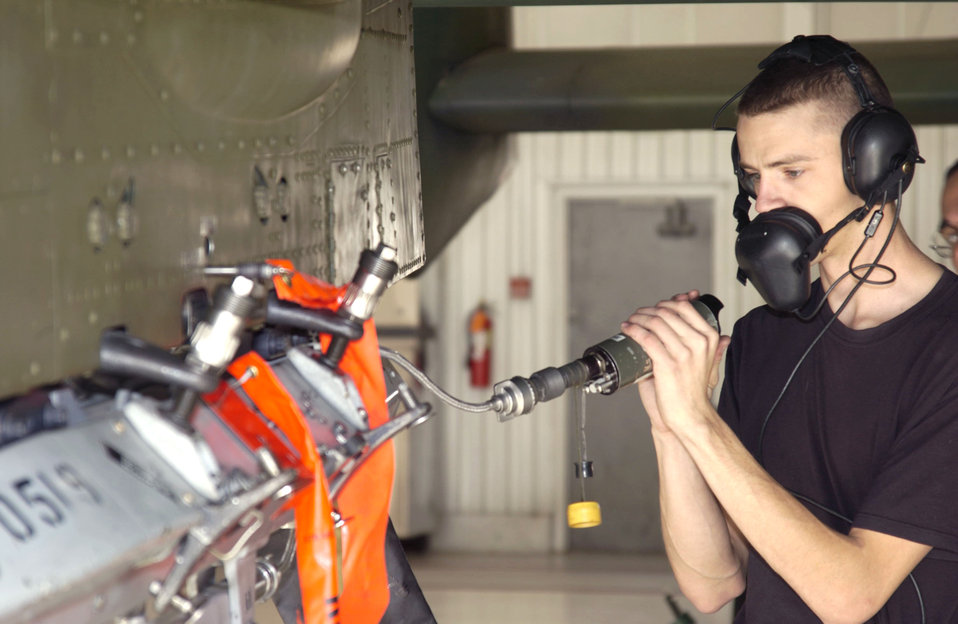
Hello?

DAVIS-MONTHAN AIR FORCE BASE, Ariz. -- Airman 1st Class Christopher Redmond performs a functional check before loading a bomb onto an A-10 Thunderbolt II here Jan. 10. Airman Redmond is a weapons loader assigned to the 355th Aircraft Maintenance Squadron.